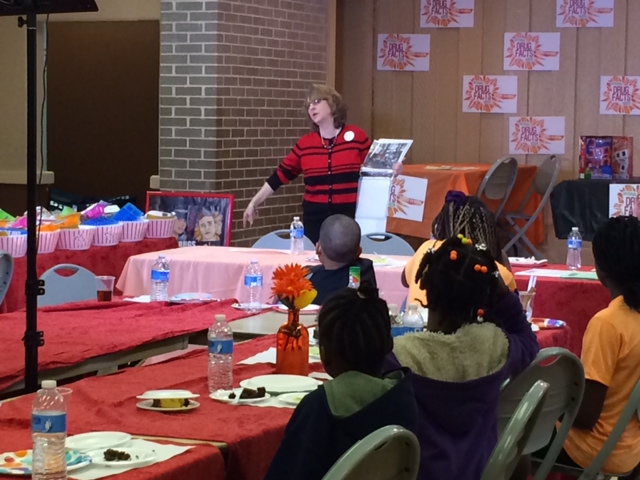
Group in Florida Shatter the Myths on Drugs

Folks from Orlando, Florida are 'Shattering the Myths' during the 2014 National Drug Facts Week at Orlo Vista Park.